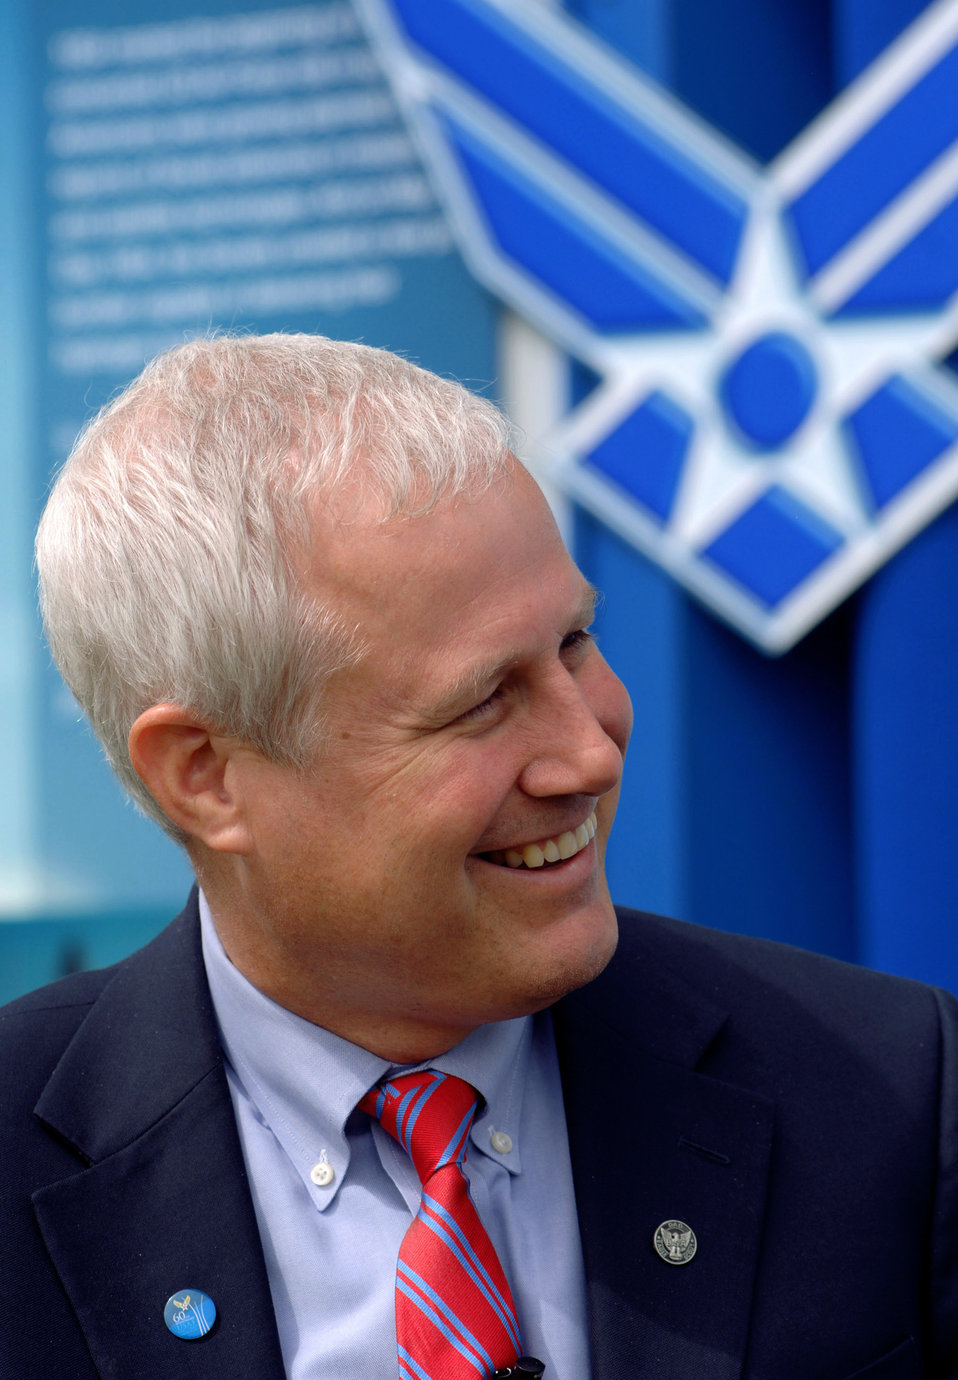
Astronaut orbits Air Force Week science day

Jay Buckey talks to Science Day participants during Air Force Week New England Aug. 21 at Concord, N.H. Dr. Buckey, a former major and astronaut, was the honorary speaker for the event. The Christa McAuliffe Planetarium hosted the Air Force New England Science Day which provided children and adults hands on displays of Air Force equipment, a model rocket launch demonstration, an F-16 Fighting Falcon static display, and